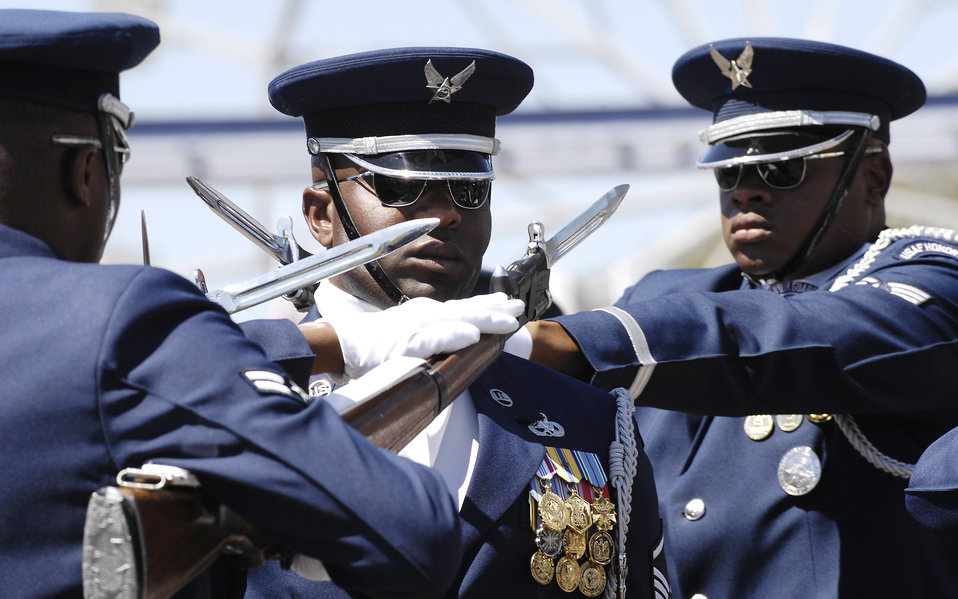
Close call

Members of the U.S. Air Force Honor Guard Drill Team perform Sept. 5, 2009, at the California State Fair in Sacramento. The Drill Team performed five times at the fair which was attended by more than 675,000 people.